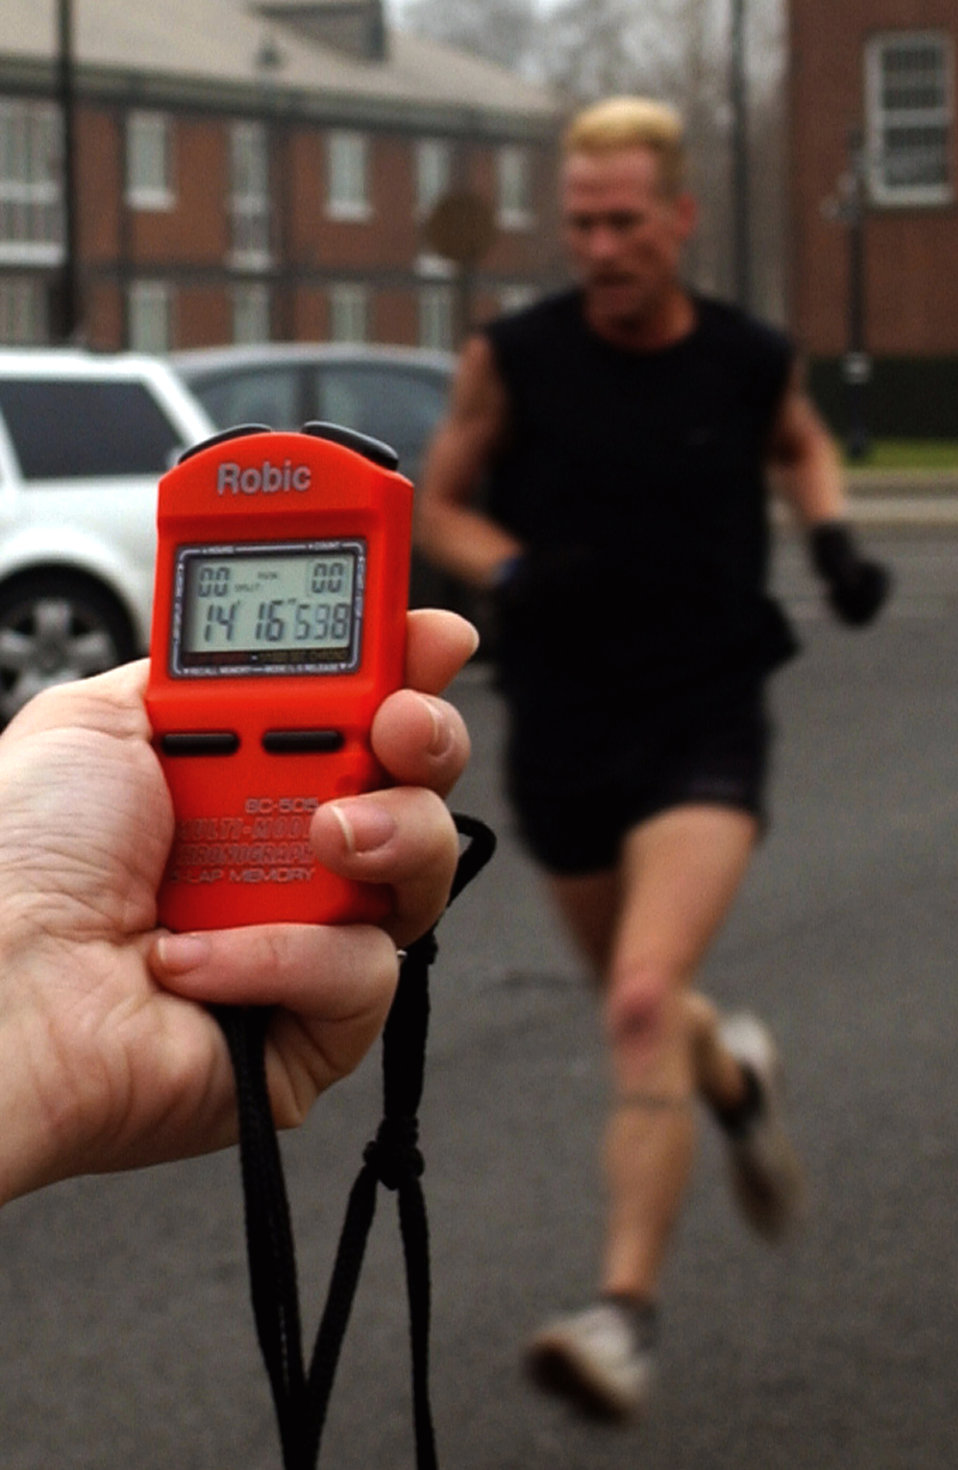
Run time

ROYAL AIR FORCE MILDENHALL, England -- Master Sgt. Garth Peterson finishes in first place during a 5k fun run here March 27.